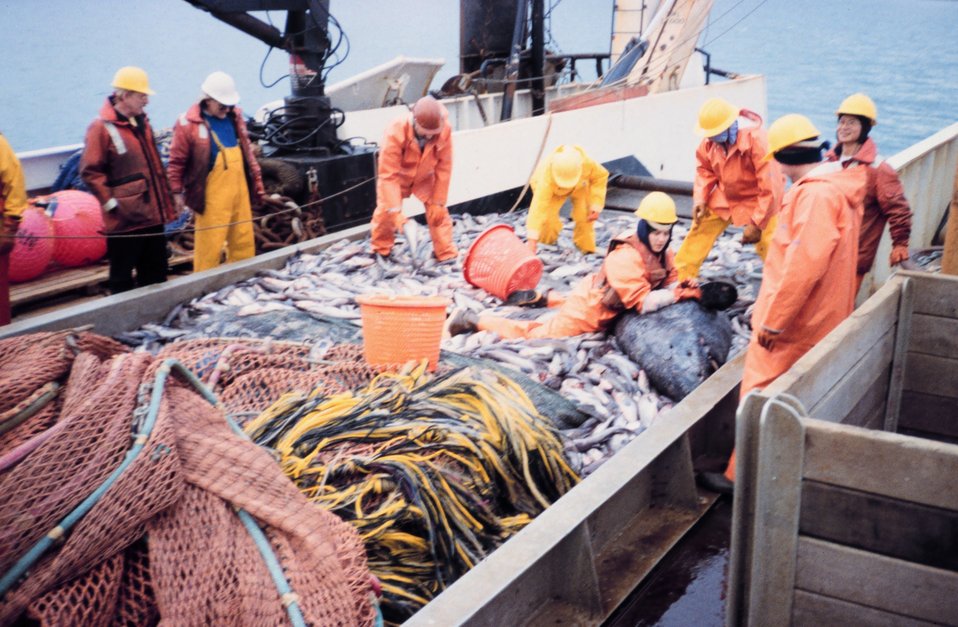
Haulback was too large to lift up and empty onto sorting table. Thus emptied on deck.